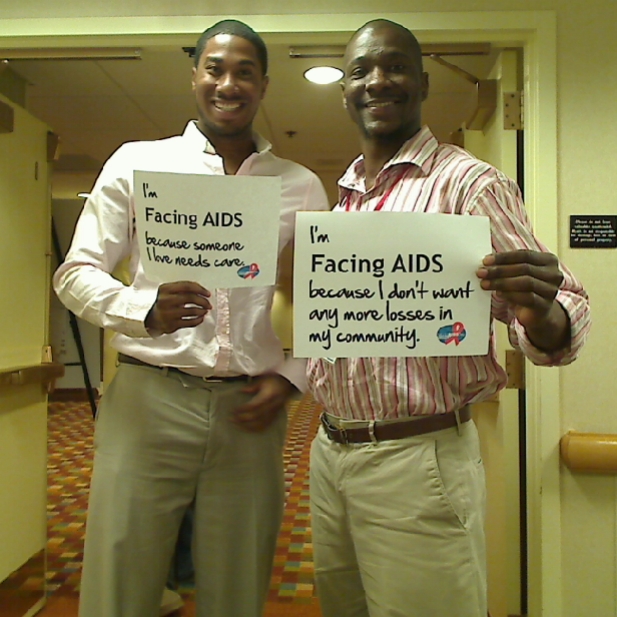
I'm Facing AIDS because someone I love needs care; I'm Facing AIDS because I don't want any more losses in my community.